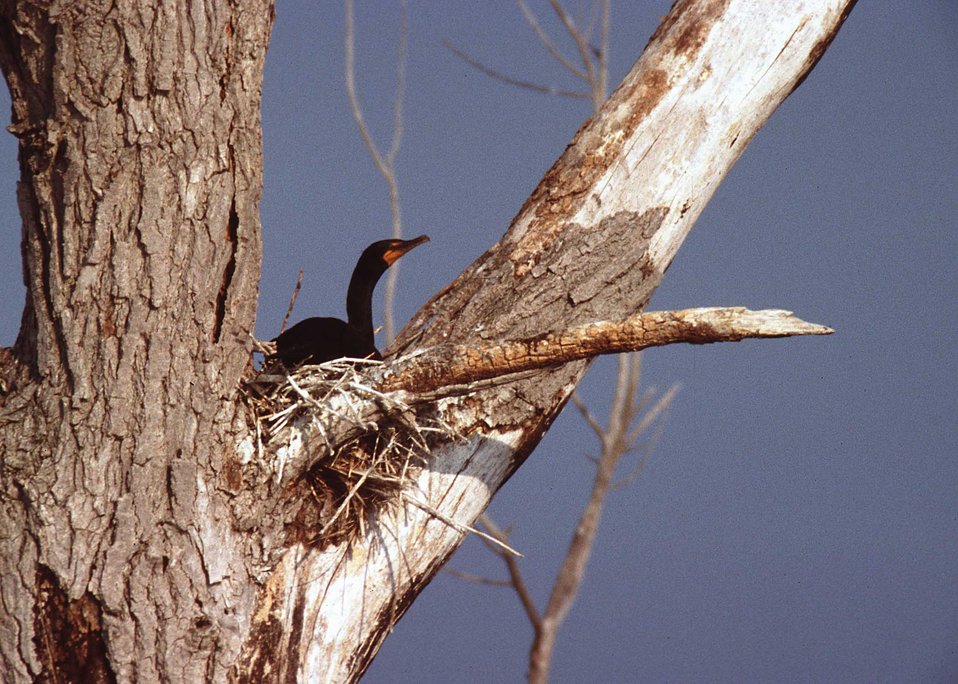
Cormorant on nest in South Dakota.